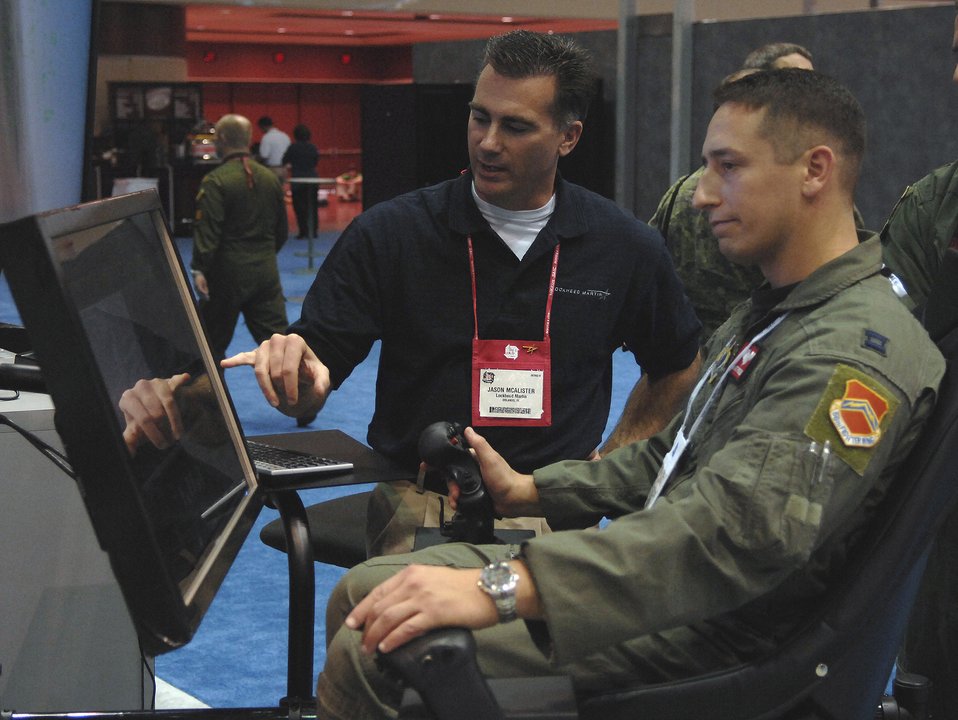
Technology conference powers down

Capt. Matt Poisson (right) tries out some of the newest technology on an F-35 Joint Strike Fighter simulator while Jason McAlister from Lockheed Martin instructs him on the new displays Nov. 30 during the Interservice/Industry Training, Simulation and Education Conference in Orlando, Fla. Captain Poisson is F-16 Fighting Falcon pilot from Luke Air Force Base, Ariz.